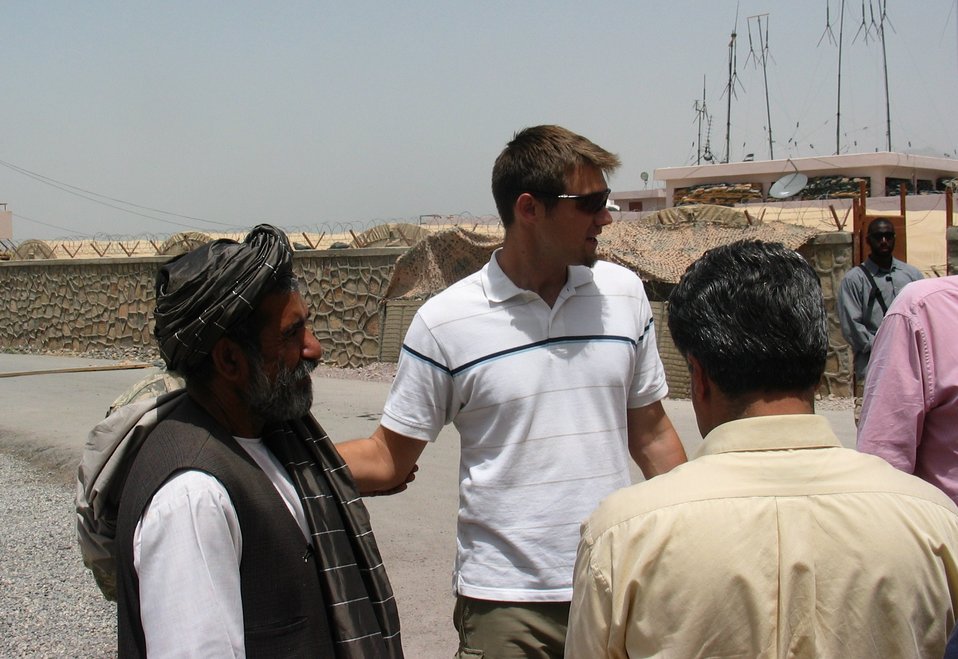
CODEL Berman